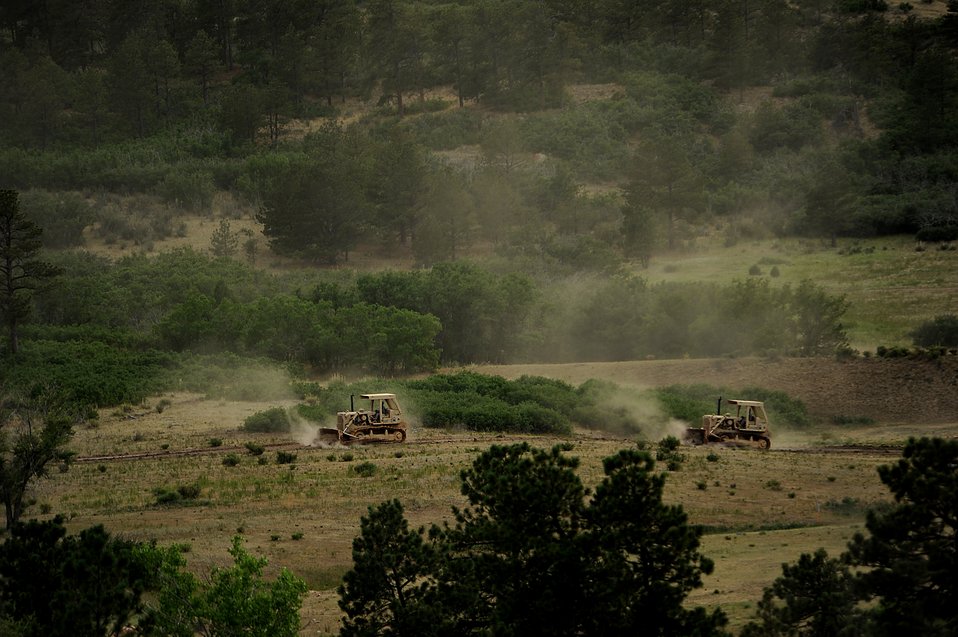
Waldo Canyon Fires

Bulldozers brought in from Fort Carson cut a fire line as firefighters continue to battle several fires that burned into the evening hours in Waldo Canyon on the U.S. Air Force Academy June 27, 2012. The fires, which have burned more than 15,000 acres, began spreading to the southwestern corner of the Academy in the early morning, causing base officials to evacuate residents.